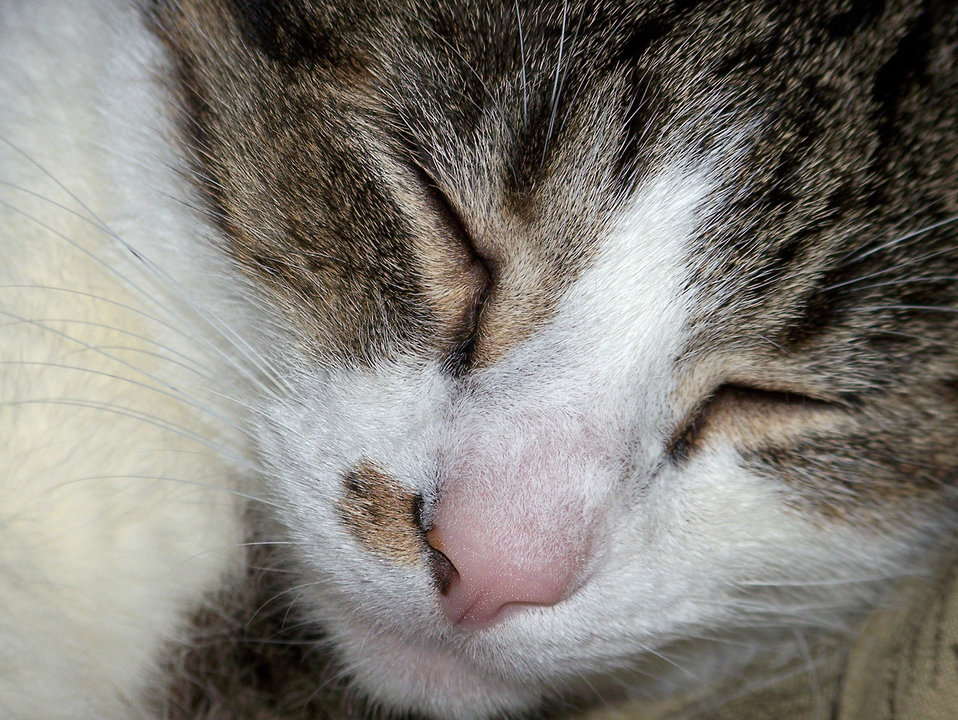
Sleeping cat

The cat is sleeping.